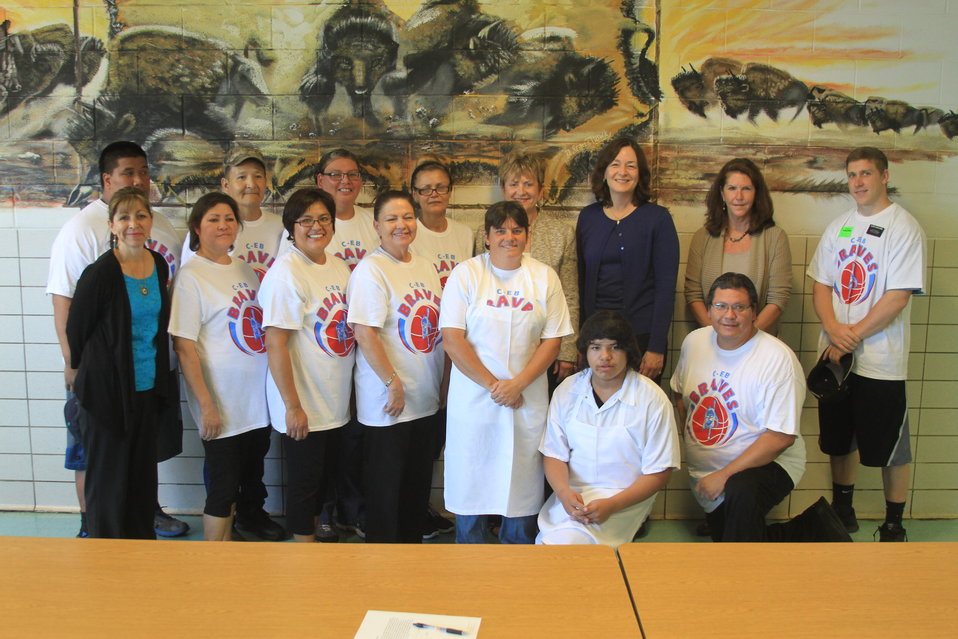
U.S. Department of Agriculture (USDA), Deputy Under Secretary for Food and Nutrition Service (FNS) with the Food Service Staff at the Cheyenne River School lunch room on the Cheyenne River Indian Reservation, SD, on Tuesday, Sept. 24, 2013. USDA photo by Tim Potts.
.